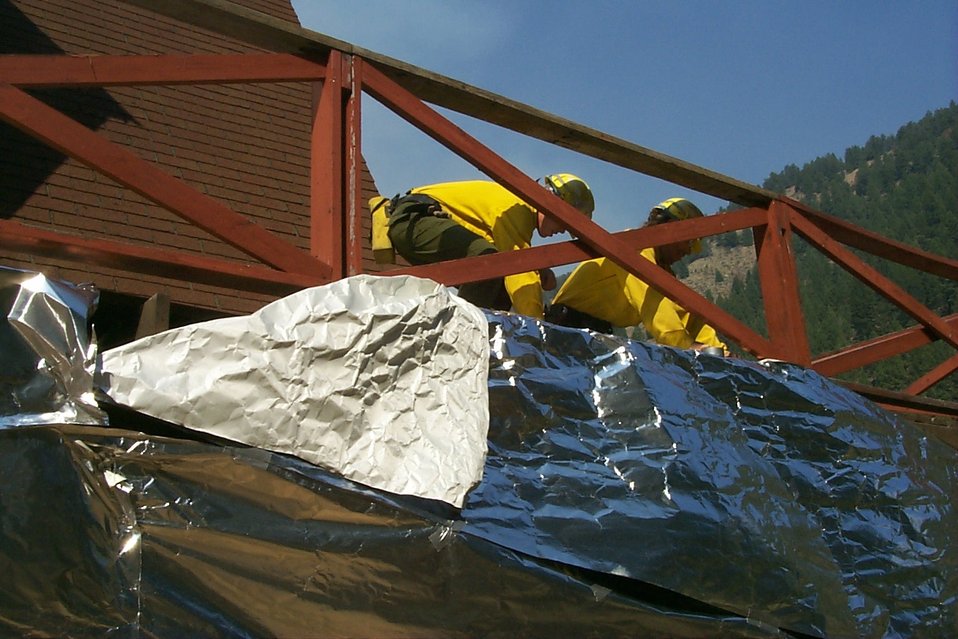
Fire retardant measures Fire Clearwater Fire Salmon Field Office USRD Upper Snake River District